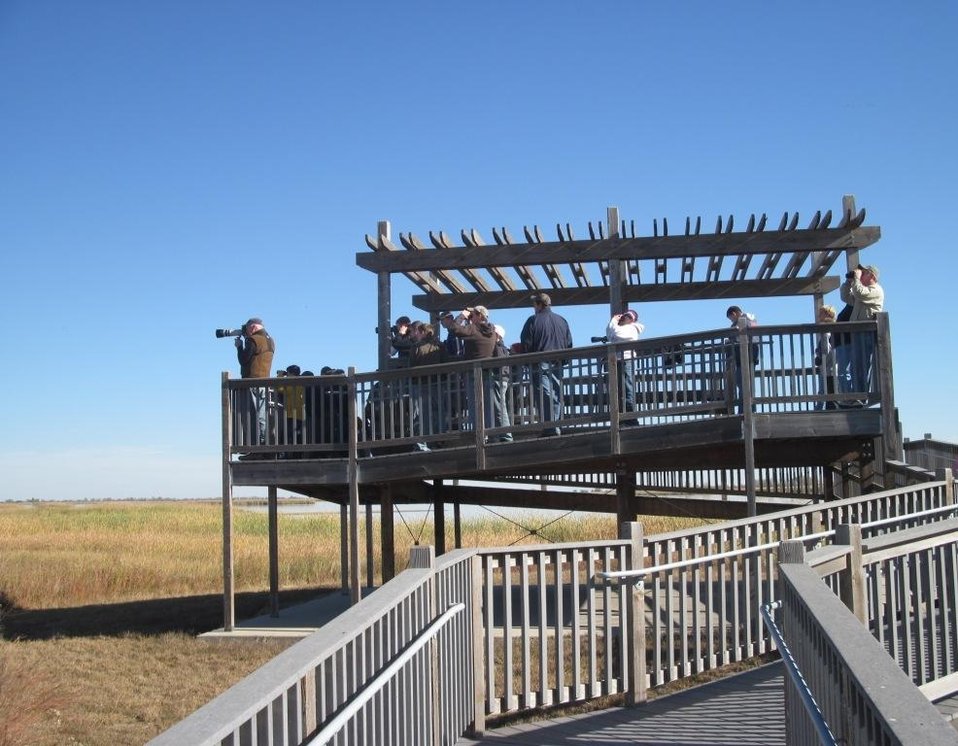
Viewing Deck at Quivira National Wildlife Refuge

Visitors gather on the viewing deck at Quivira National Wildlife Refuge in Kansas to view whooping cranes in their natural habitat.